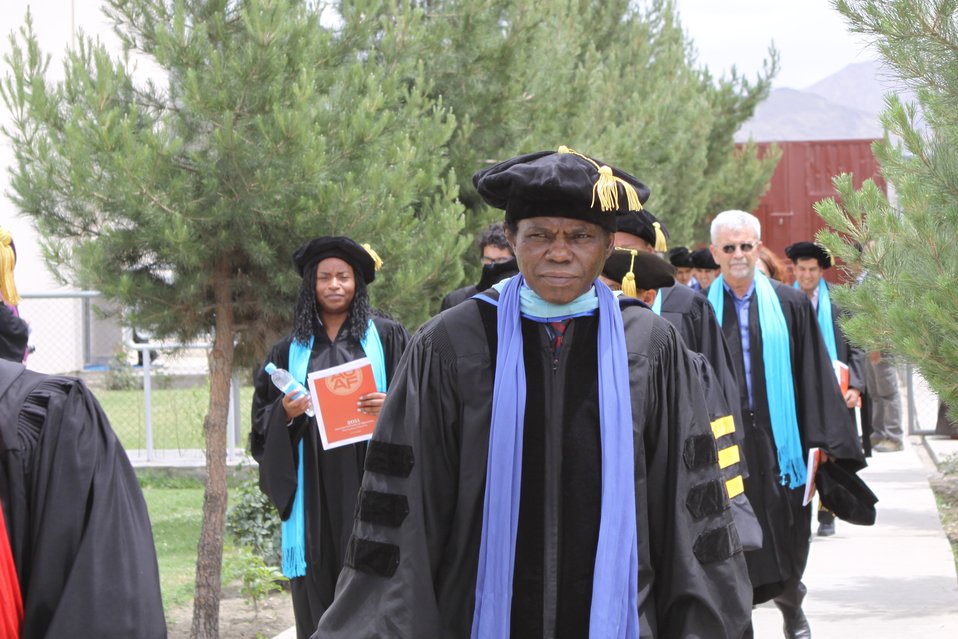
100526 AUAF Graduation 331